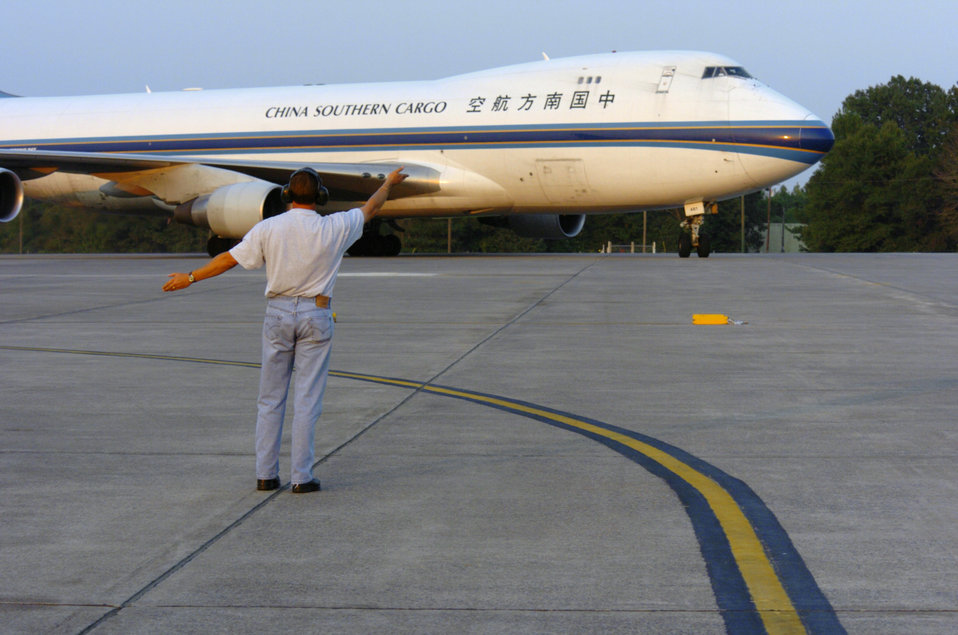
Little Rock welcomes China hurricane aid

LITTLE ROCK AIR FORCE BASE, Ark. -- An aircraft loaded with humanitarian aid supplies from China arrives here Sept. 7 with 100 tons of hurricane relief supplies.